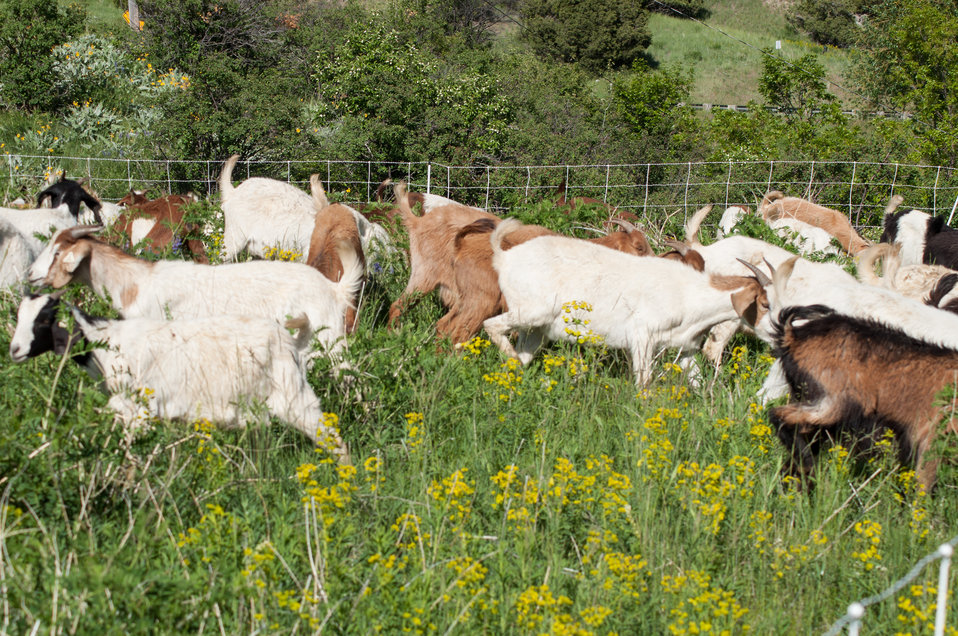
Goat landing on Bozeman Fish Technology Center

On June 8 at 5:00 p.m., 409 yearling domestic goats were off-loaded on the Bozeman Fish Technology Center (BFTC) campus. Thus begins a 3-4 year project of monitored targeted grazing and applications of friendly insects to control noxious weeds and manage brush overgrowth on property of the U.S. Fish and Wildlife Service BFTC.

Purposes of this effort are to reduce the presence of undesirable vegetation, promote restoration of native plants, and assist with fire protection by reducing burnable plant biomass.

The cooperative venture involves the U.S. Fish and Wildlife Service, Montana Outdoor Science School, Friends of the Bozeman Fish Technology Center, Gallatin Valley Land Trust, U.S. Forest Service, and Prescriptive Livestock Services. Integrated Weed Control is supplying the insects as an in-kind contribution to the project, and has applied insects on the BFTC’s 'hot spots' in previous years.